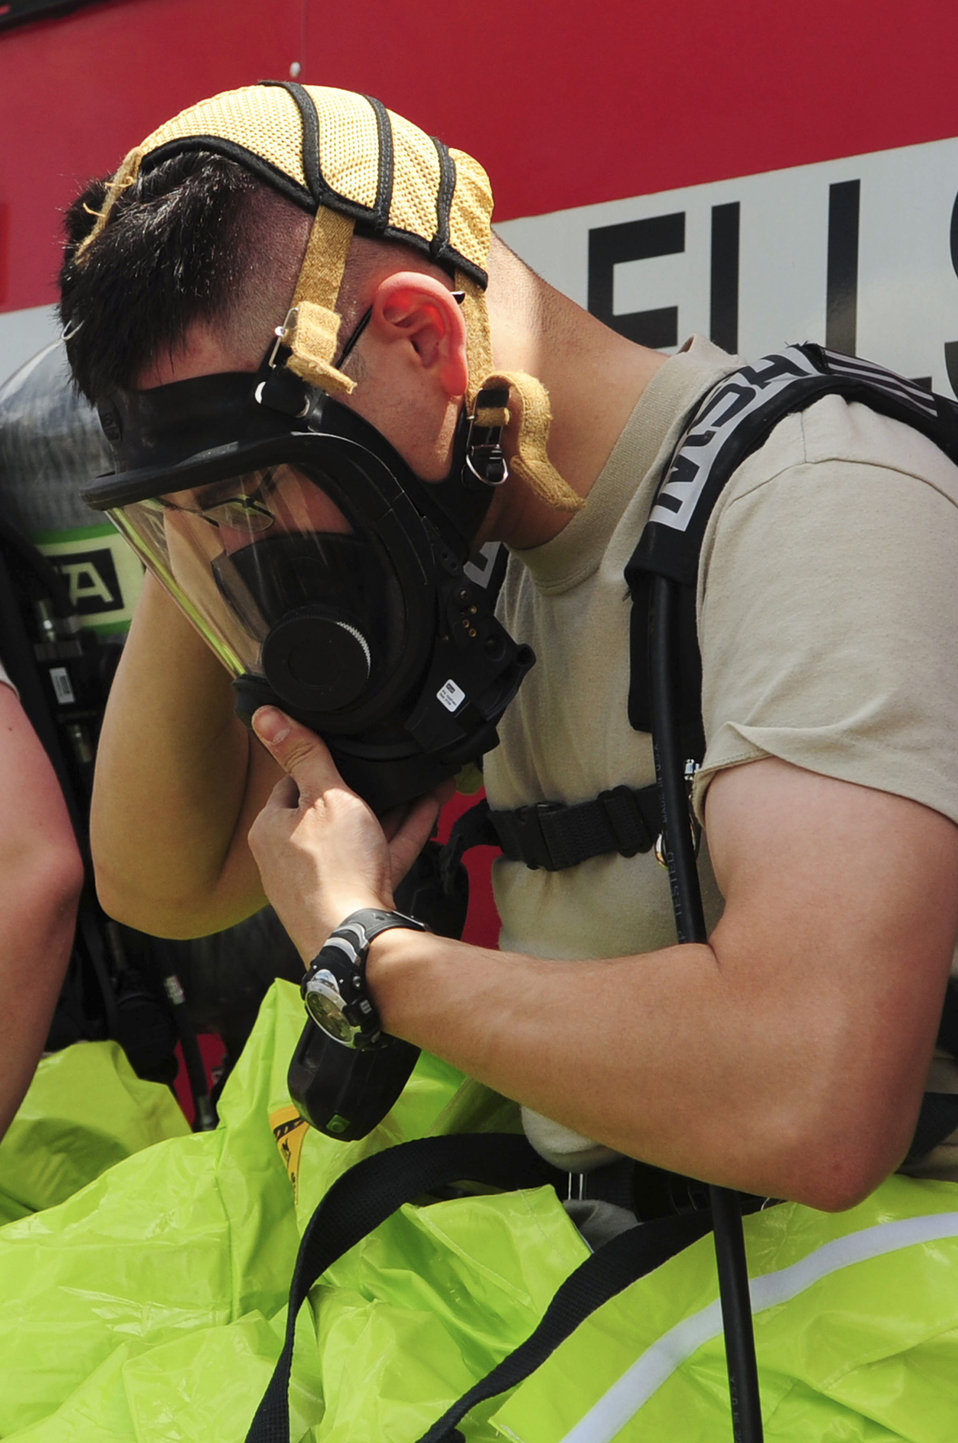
Ellsworth Airmen ready for any emergency

Airman 1st Class Matthew Hung adjusts his gas mask before participating in an emergency management exercise, June 3, 2010, at Ellsworth Air Force Base, S.D. Airmen here performed various scenarios involving chemical, biological, radiological and nuclear detection and decontamination operations. Airman Hung is an emergency management journeyman with the 28th Civil Engineer Squadron.